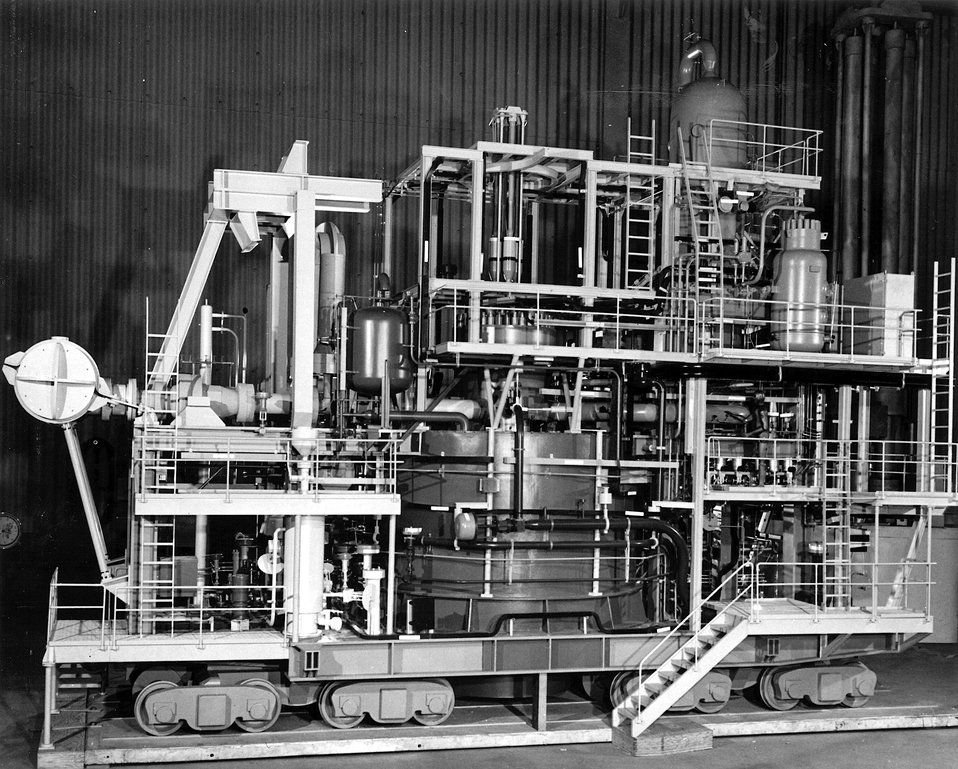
Idaho...this quarter-scale model of the LOFT Mobile Test Assembly is assisting engineers and fabricators at the US Atomic Energy Commission's National Reactor Testing Station to complete the full-scale reactor safety testing assembly, scheduled for 1973.